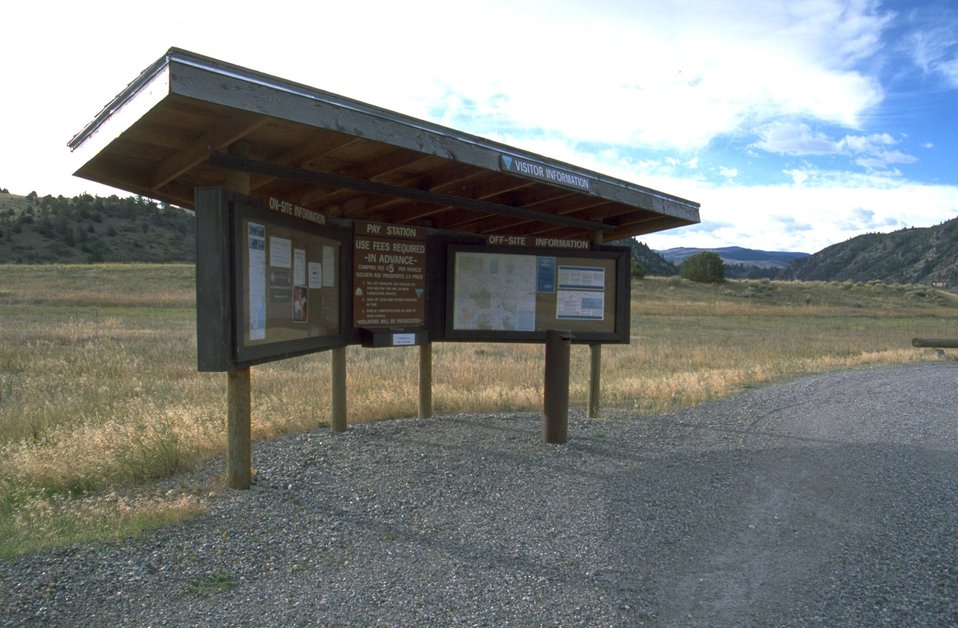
Visitor Information Kiosk at Red Mountain